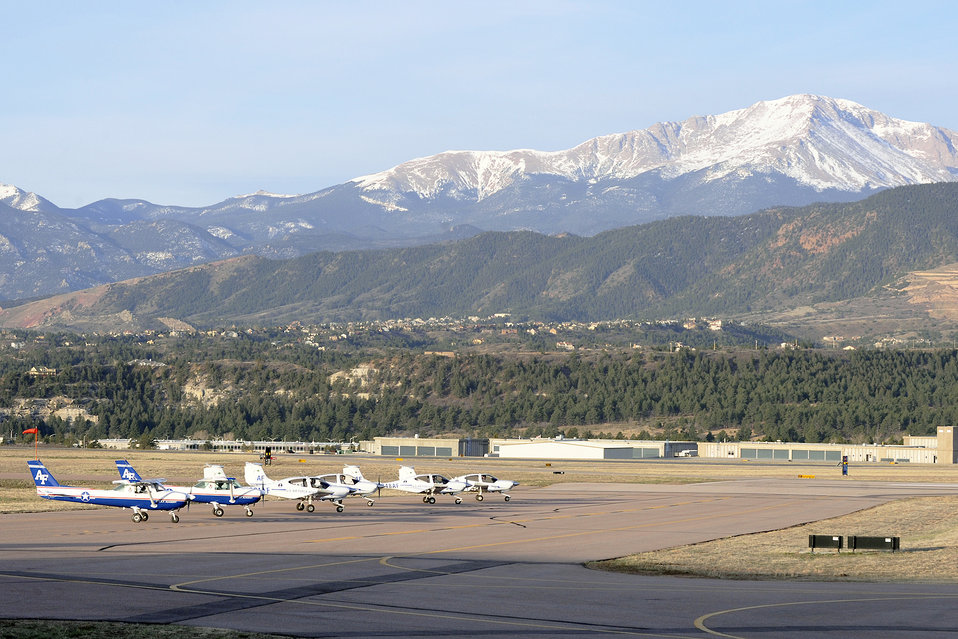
T-52A training flight

T-52A and T-41D Mescalero aircraft line up before takeoff April 15, 2010, on the airfield at the U.S. Air Force Academy, Colo.